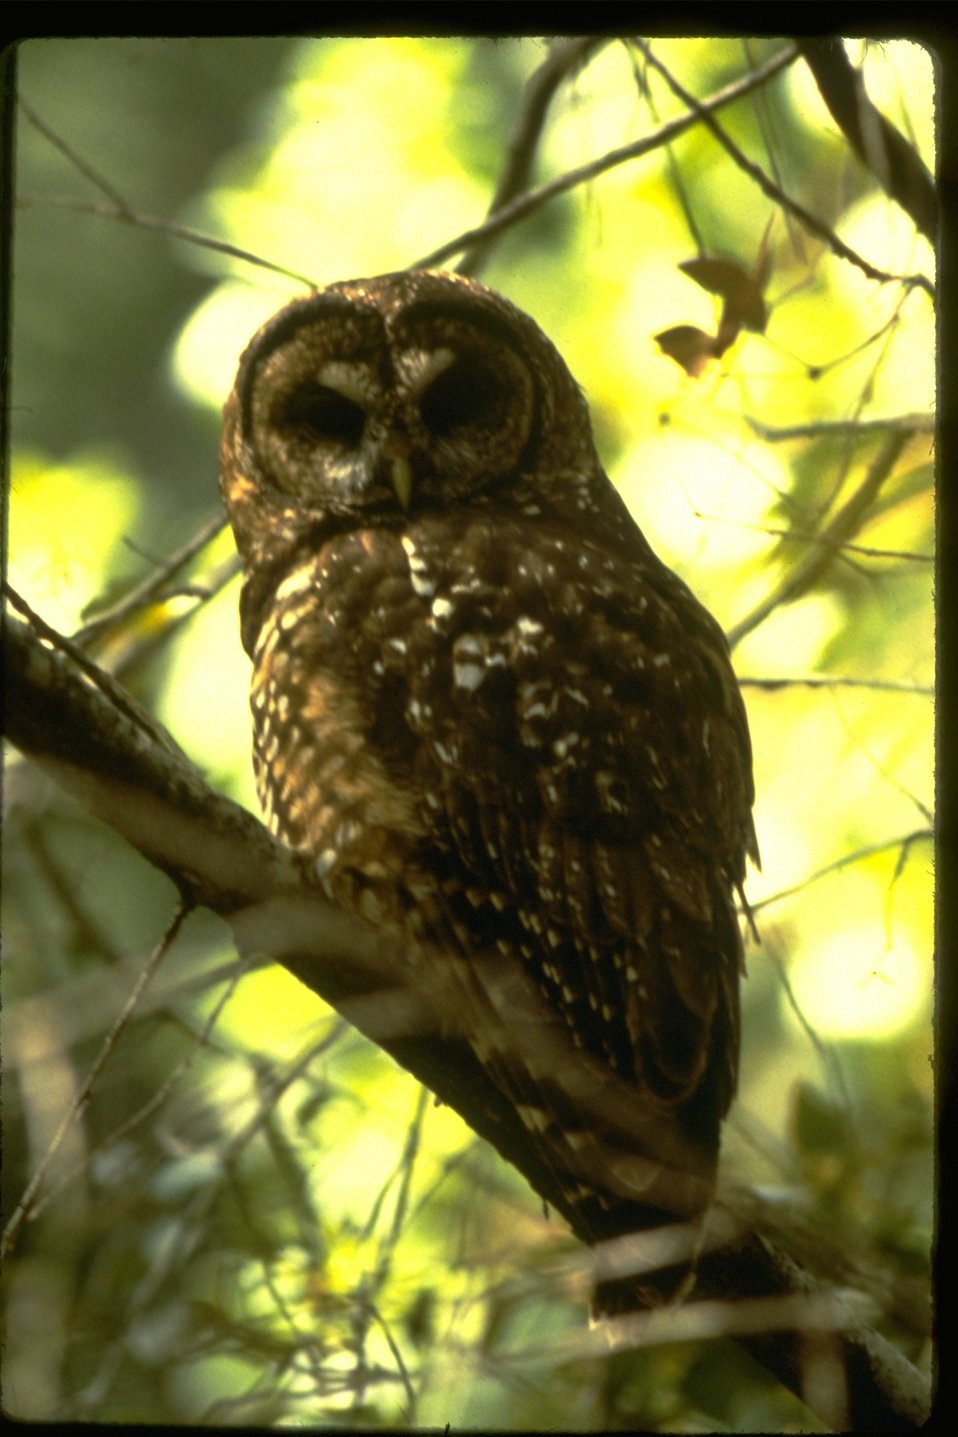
Northern Spotted Owl perched on branch.